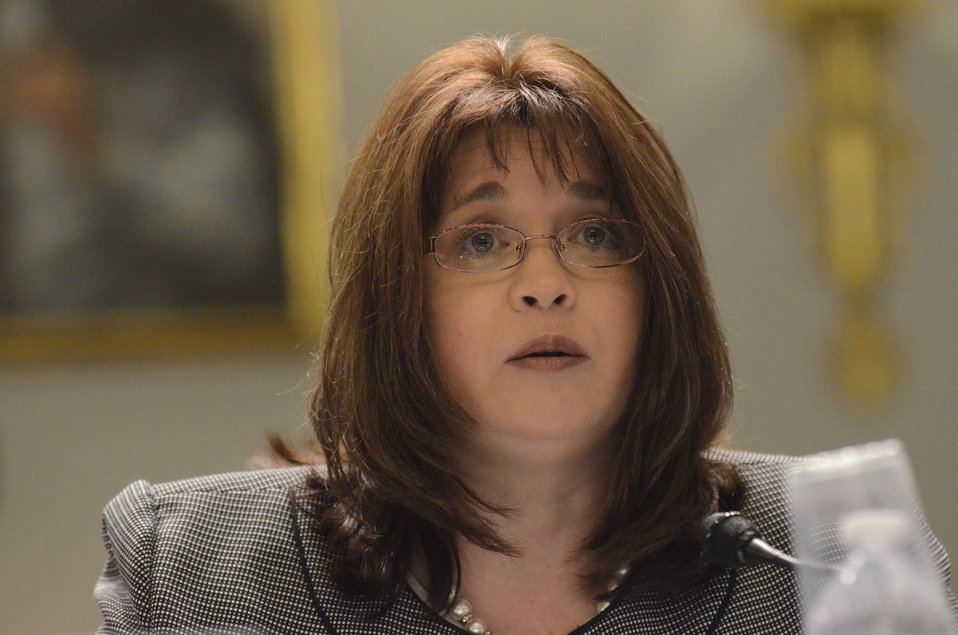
Regional Customs Compliance and Operations Manager for IKEA in North America Laurie Everill testifies on Retailers & Entertainers Lacey Implementation & Enforcement Fairness Act & Freedom from Over-Criminalization & Unjust Seizures Act at the Longworth House Office Building in Washington, D.C. on Tuesday, May 8, 2012.